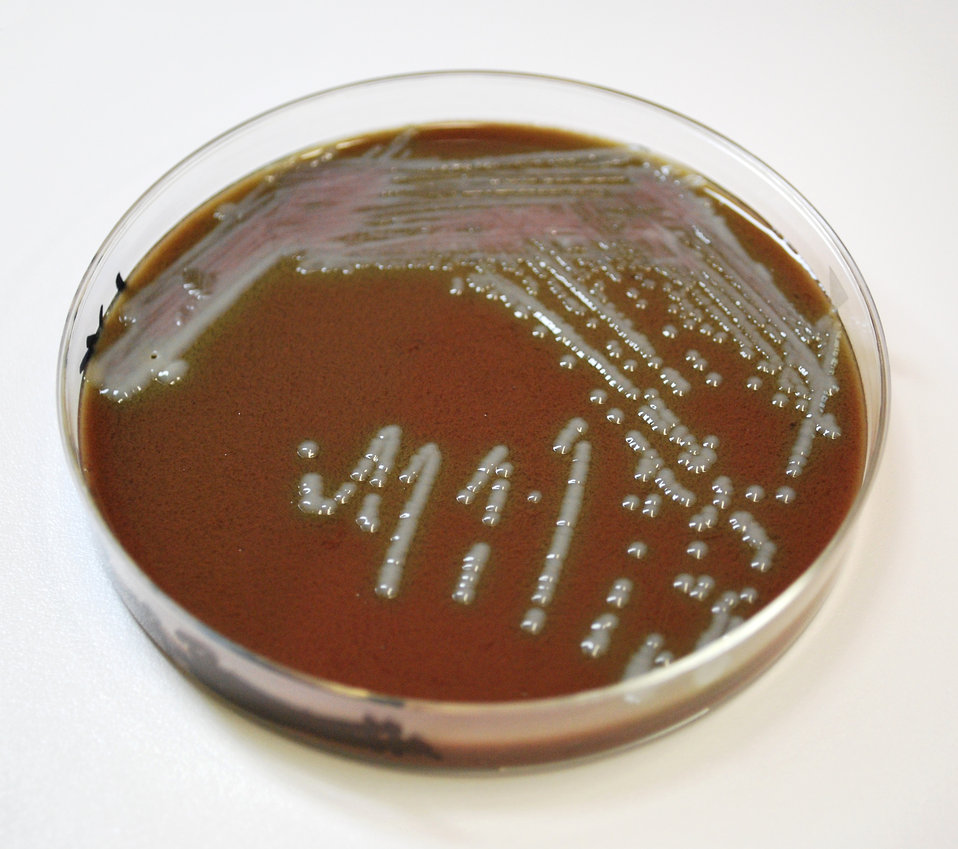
This image depicts a Petri dish containing a chocolate agar medium, which had been inoculated with Gram-negative Francisella tularensis live vaccine strain (LVS) bacteria. F. tularensis is the pathogen responsible for causing the disease tularemia. This was the appearance of the colonial growth after 72 hours of incubation. What is tularemia?